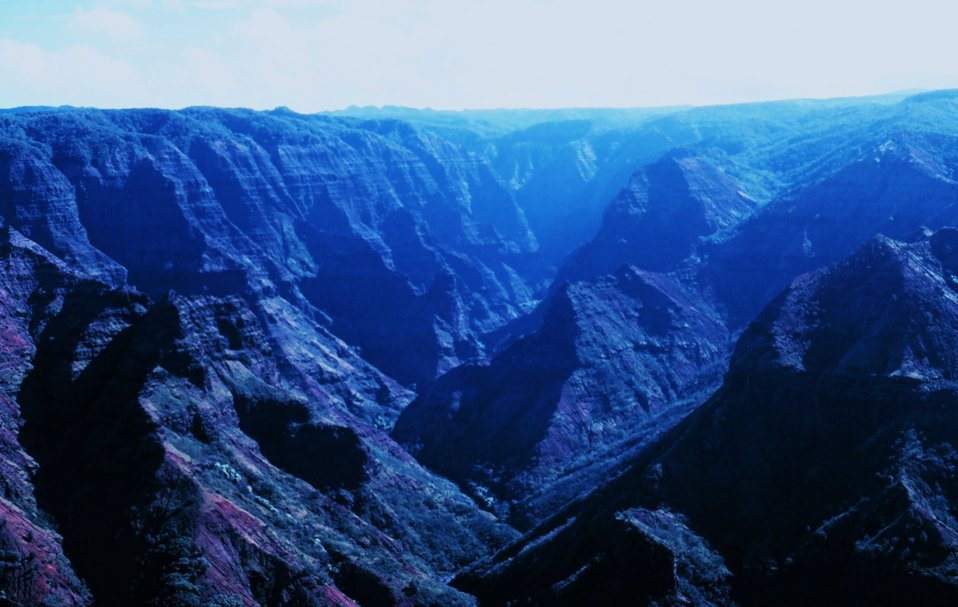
Waimea Canyon - the Grand Canyon of the Pacific